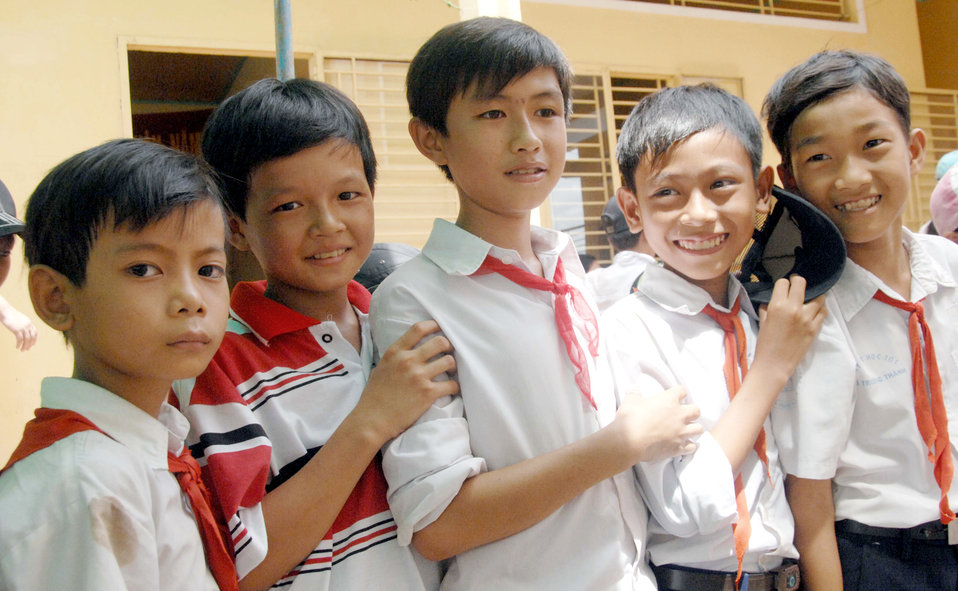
Pacific Angel 2010

Elementary school students from Truong Thanh, Vietnam, wait to be seen by members of a pediatrics clinic May 14, 2010, as part of Pacific Angel 2010. More than 50 U.S. servicemembers are in Vietnam for the operation and have joined the Vietnamese military, non-governmental organizations and civil health and engineering members in medical and engineering efforts.